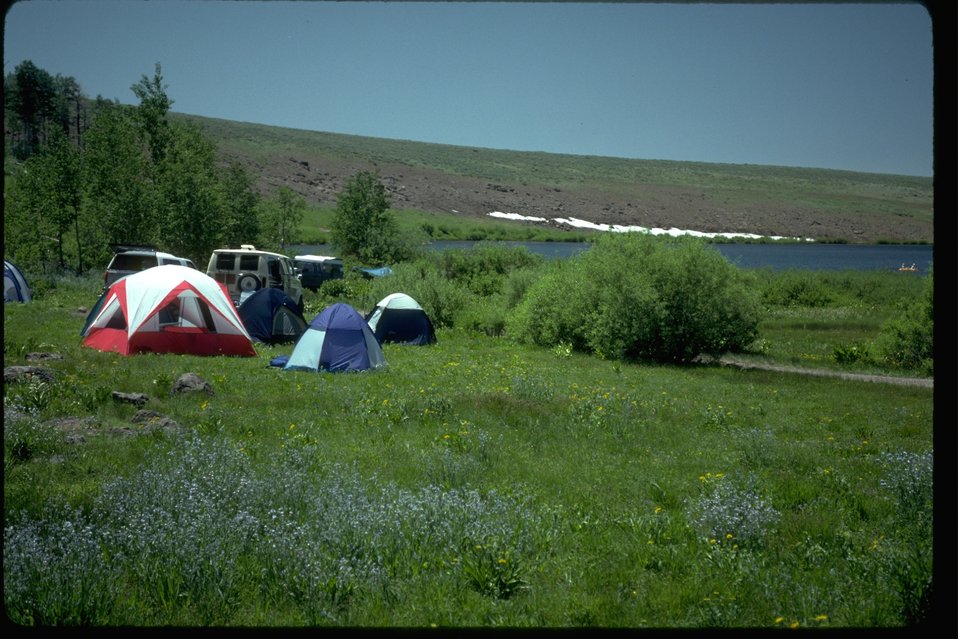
Camping at Fish Lake Campground on Steens Mountain in Southeastern Oregon.